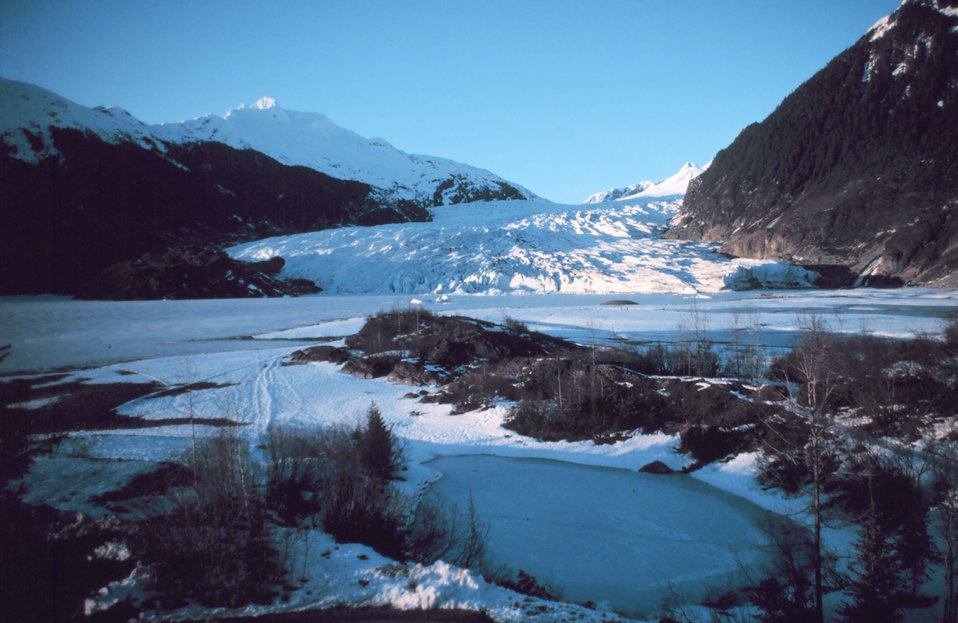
Mendenhall Glacier